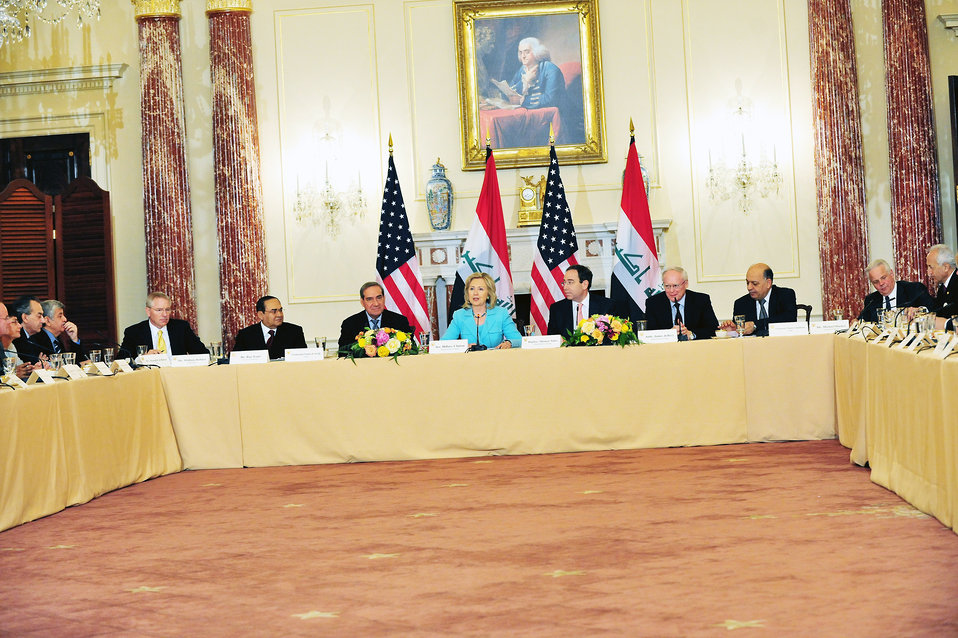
Secretary Clinton Participates in the Business Forum Promoting Commercial Opportunities in Iraq

U.S. Secretary of State Hillary Rodham Clinton participates in the Business Forum Promoting Commercial Opportunities in Iraq, at the U.S. Department of State in Washington, D.C., on June 3, 2011.